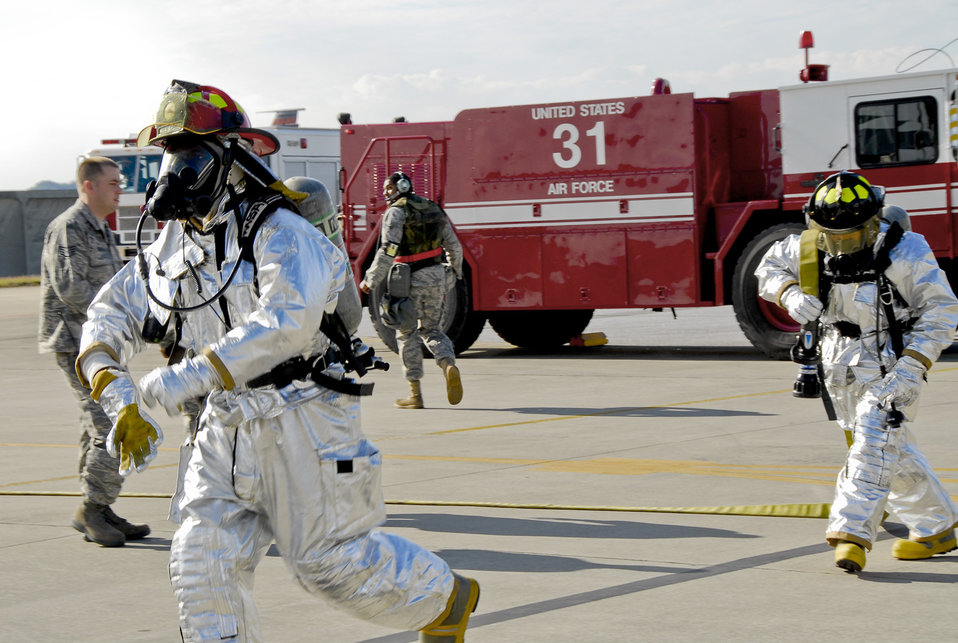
Kadena exercise

Firefighters from the 18th Civil Engineer Squadron run to save simulated victims in an aircraft-fire scenario during Beverly High 11-02, a local operational readiness exercise Jan. 19, 2011, at Kadena Air Base, Japan. The exercise tested the skills and capabilities of Kadena AB's firefighters, security-forces, and flight-medicine professionals, and their ability to work together during an emergency.